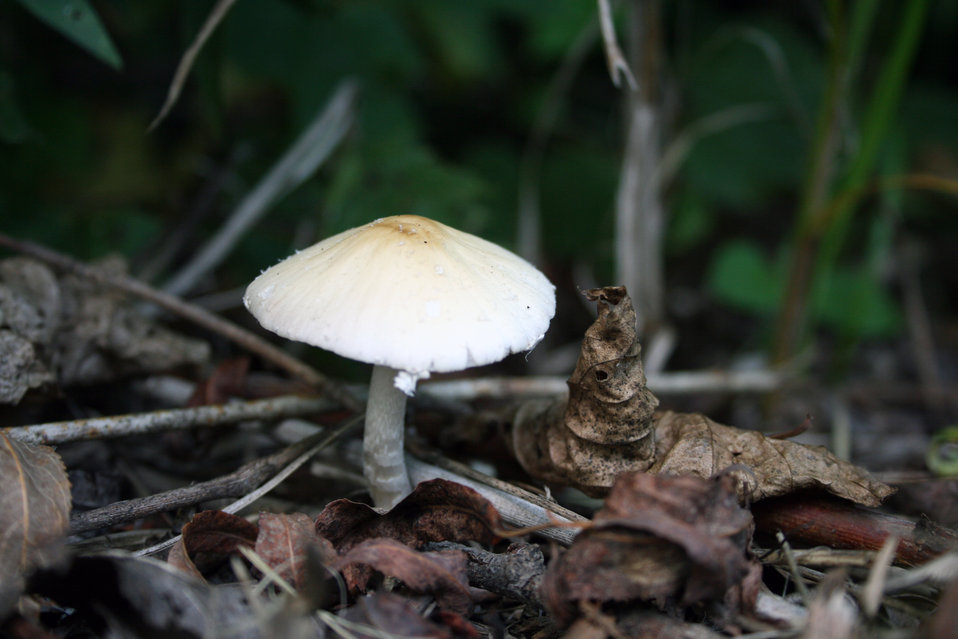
Mushroom